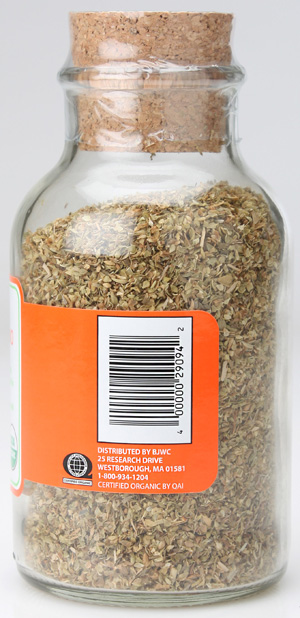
RECALLED - Organic Oregano

July 12, 2013 - Product Recall - Olde Thompson Inc. Issues a Voluntary Recall of Earth’s Pride Organics: Organic Oregano 2.2 Oz Glass Jars With Cork Closure Due to Possible Salmonella Risk.